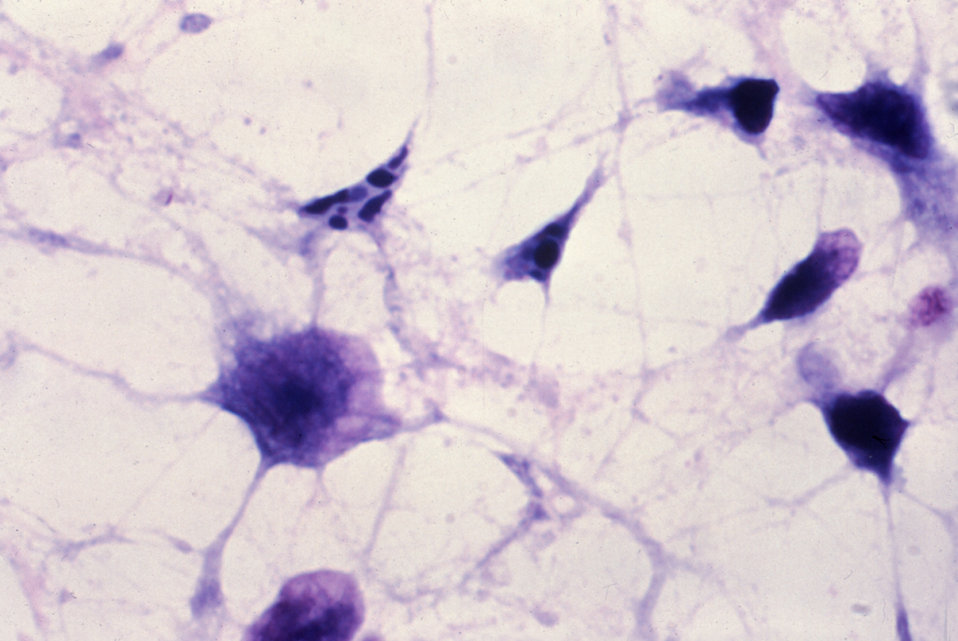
The Clostridium difficile enterotoxin, CPE, is the principal toxin involved in C. difficile foodborne illness.